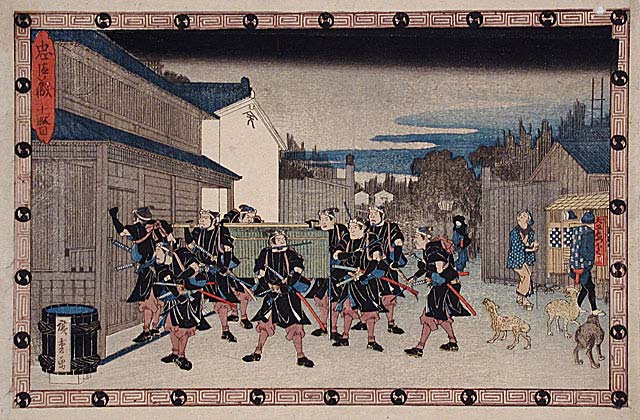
Act X